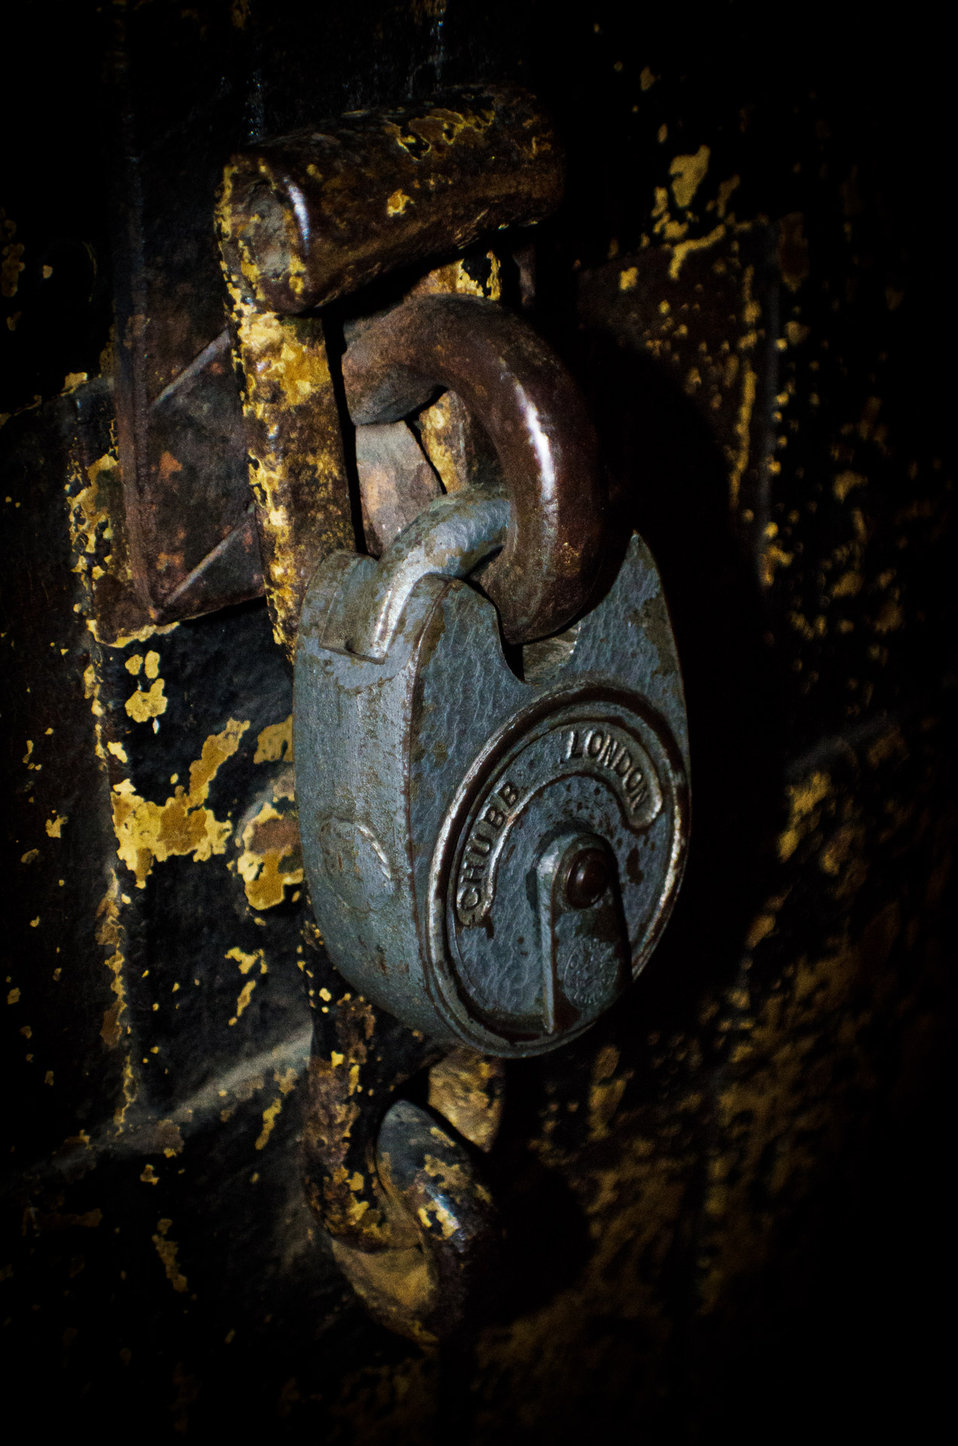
Padlock - background.